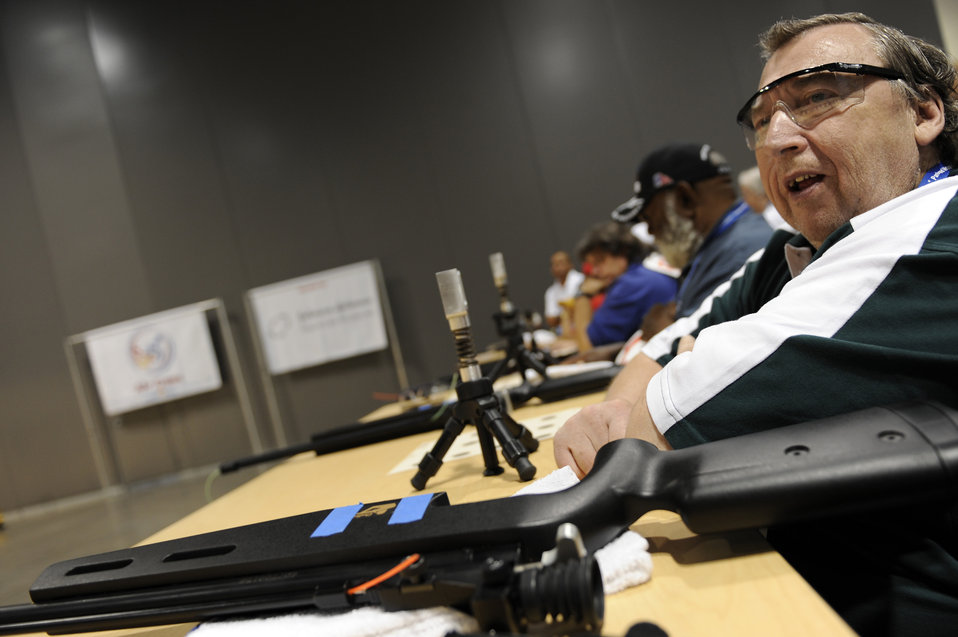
Wheelchair athletes participate in wheelchair games

William Ethridge competes in the air gun competition Jul. 14 during the 29th National Veterans Wheelchair Games in Spokane, Wash. Ethridge is an Air Force veteran and resides in Spokane, Wash. The 29th National Veterans Wheelchair Games runs through Jul. 19.